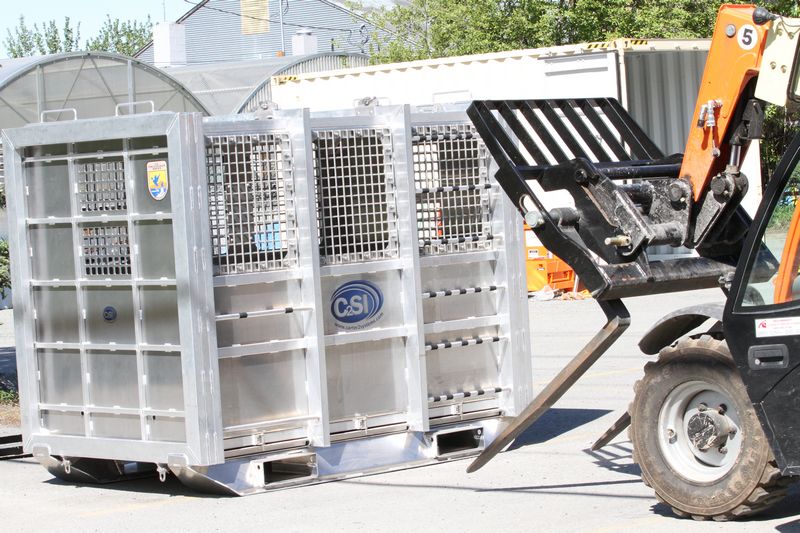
Press Conference on the polar bear holding module. USFWS/Rose Primmer